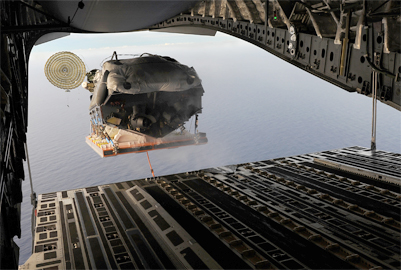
Hickam C-17 drops a Navy boat over Pacific

The Navy Special Warfare Unit ONE Maritime Craft Aerial Delivery System deploys from the ramp of a C-17 Globemaster III during airdrop operations Jan. 13, 2011 over the Pacific Ocean near Guam. Nine Sailors jumped out of the back of a C-17 after the aerial drop. Airmen from Joint Base Pearl Harbor-Hickam, Hawaii, worked with the Naval unit to deploy the boat off the coast of Guam while merging the capabilities of the U.S. Air Force and the U.S. Navy.